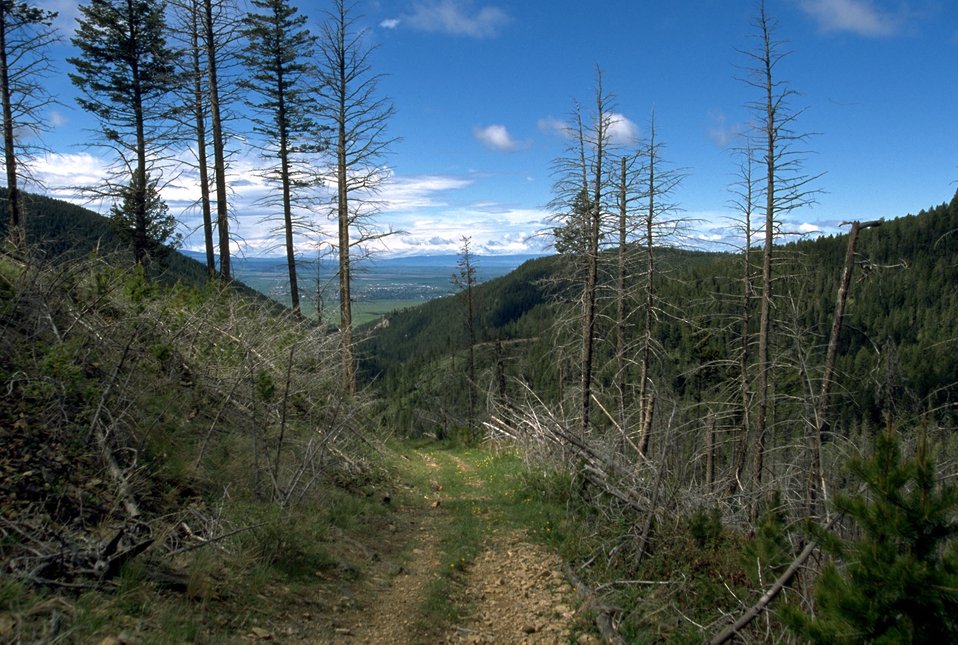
Trail running through an old burn area